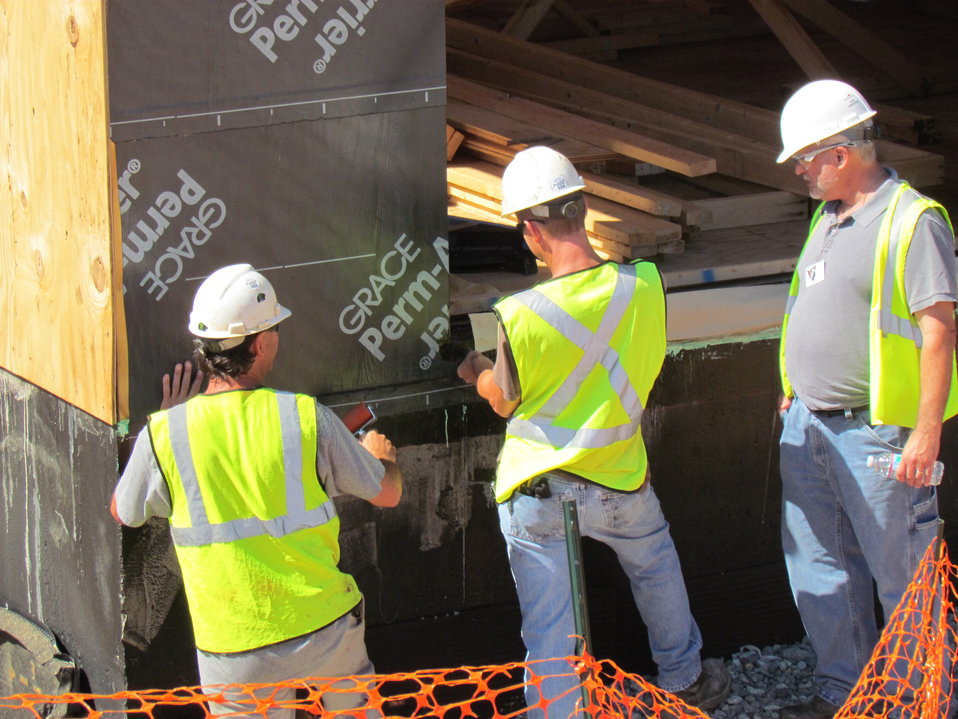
Net-Zero Energy Residential Test Facility - Workmen attaching airmoisture barrier material to exterior sheathing.